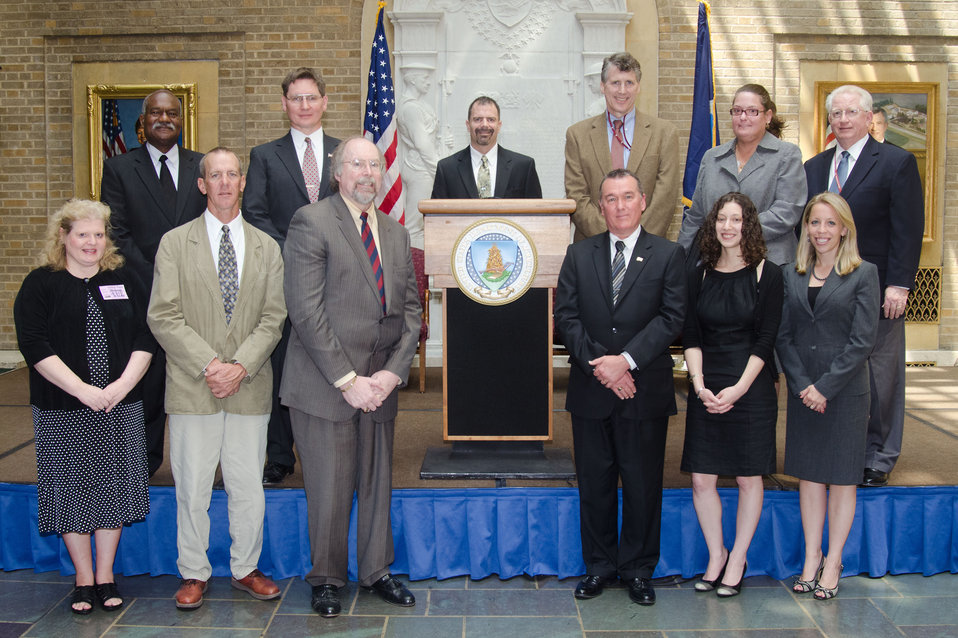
Group shot from the 2011 Unsung Hero Awards Program on Tuesday, May 3, 2011, at the U.S. Department of Agriculture Whitten Building in Washington, DC. Organizational of Professional Employees of the U.S. Department of Agriculture (OPEDA) President Louis Iacoletti behind the podium presided the ceremony.